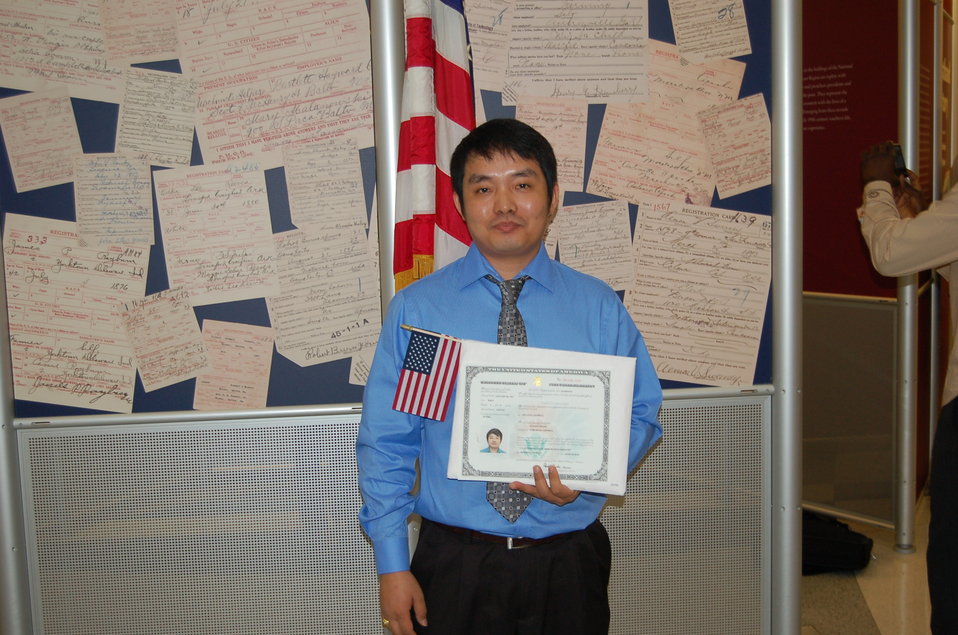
New Citizens